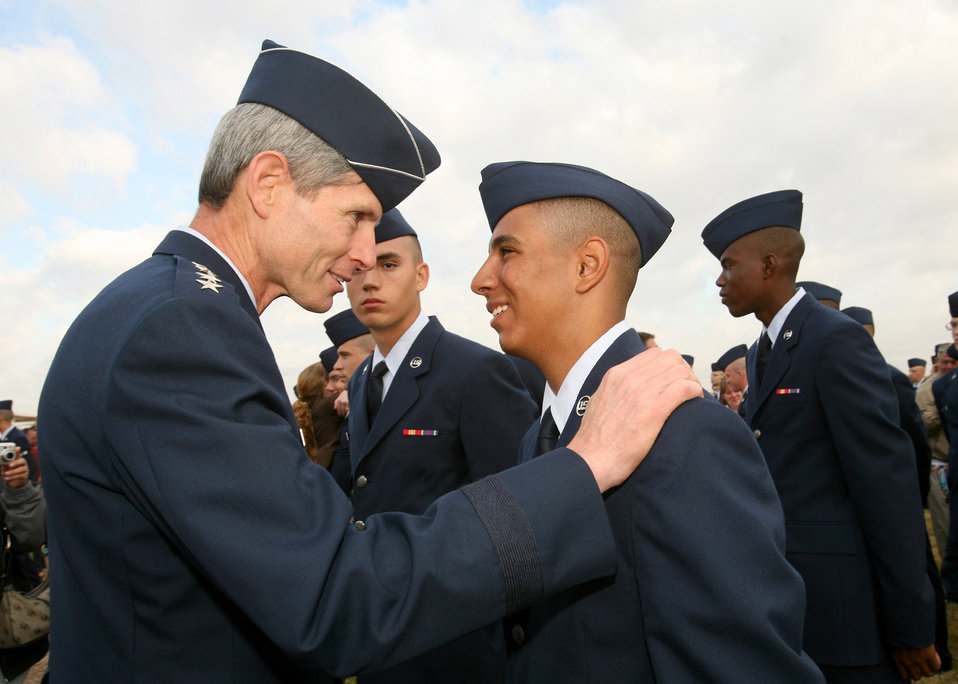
Chief of staff reviews parade

Gen. Norton Schwartz congratulates Airman Yancy Nunez on his graduation from Basic Military Training Oct. 31 at Lackland Air Force Base, Texas. While on base, General Schwartz administered the oath of enlistment to basic training graduates and served as the reviewing official for the BMT parade. Airman Nunez is from the 322nd Training Squadron, Flight 673. General Schwartz is the Air Force chief of staff.